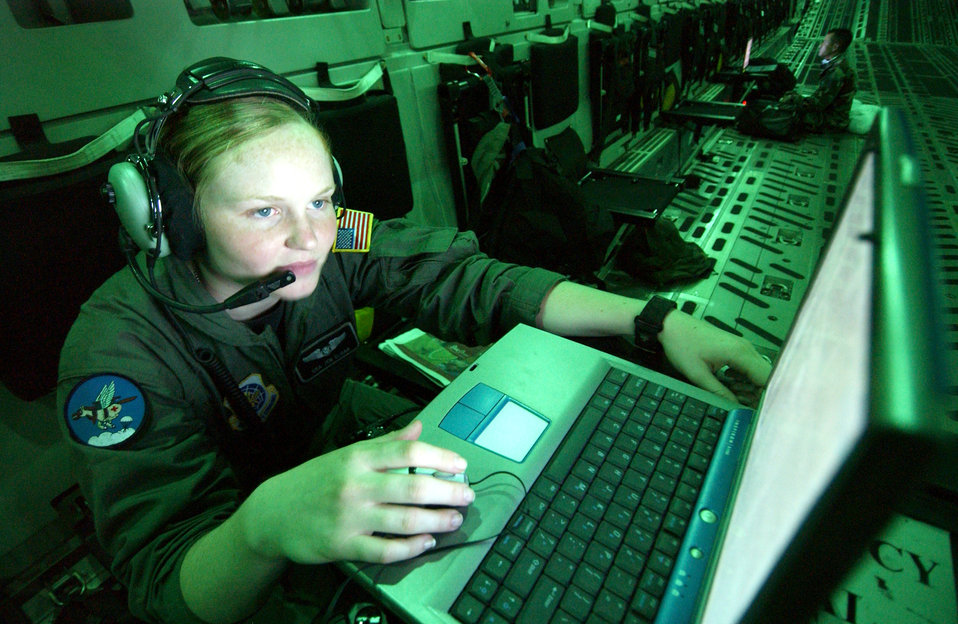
C-17s cross globe to assist international exercise

OVER AUSTRALIA -- Senior Airman Jennifer Sloan works on a mission trip report onboard a C-17 Globemaster III on June 19 following an airdrop supporting Talisman Saber 2005. Airman Sloan is a loadmaster from the 8th Airlift Squadron out of McChord Air Force Base, Wash.